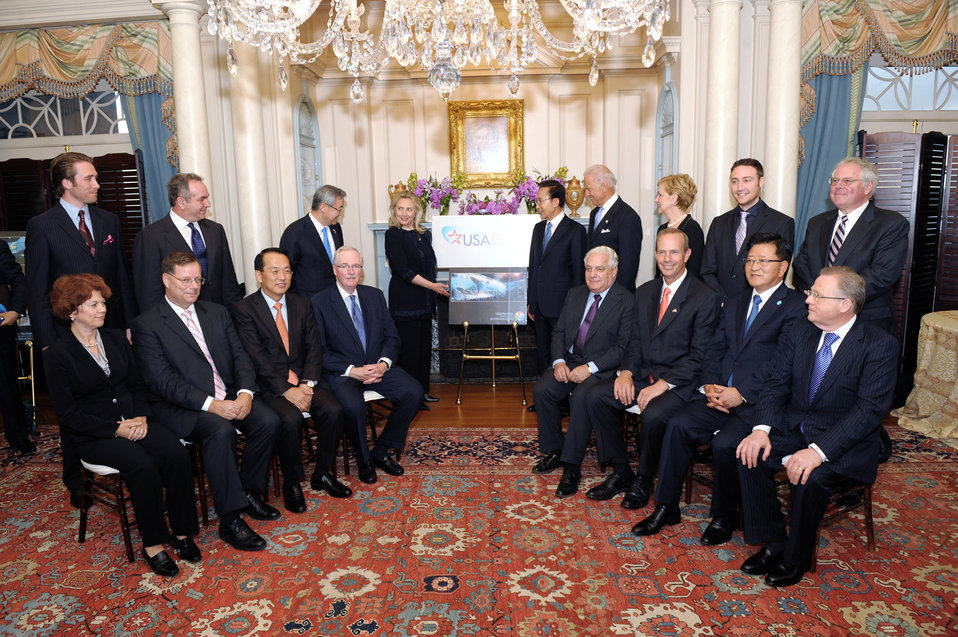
Secretary Clinton Poses for a Group Photo at Announcement of U.S. Participation in Yeosu Expo 2012

U.S. Secretary of State Hillary Rodham Clinton poses for a group photo at the announcement of U.S. Participation in Yeosu Expo 2012, at the U.S. Department of State in Washington, D.C., on October 13, 2011. Also featured in the photo are Republic of Korea President Lee Myung-bak, U.S. Vice President Joseph Biden; U.S. Assistant Secretary Ann Stock (R), and U.S. Assistant Secretary Kurt Campbell.